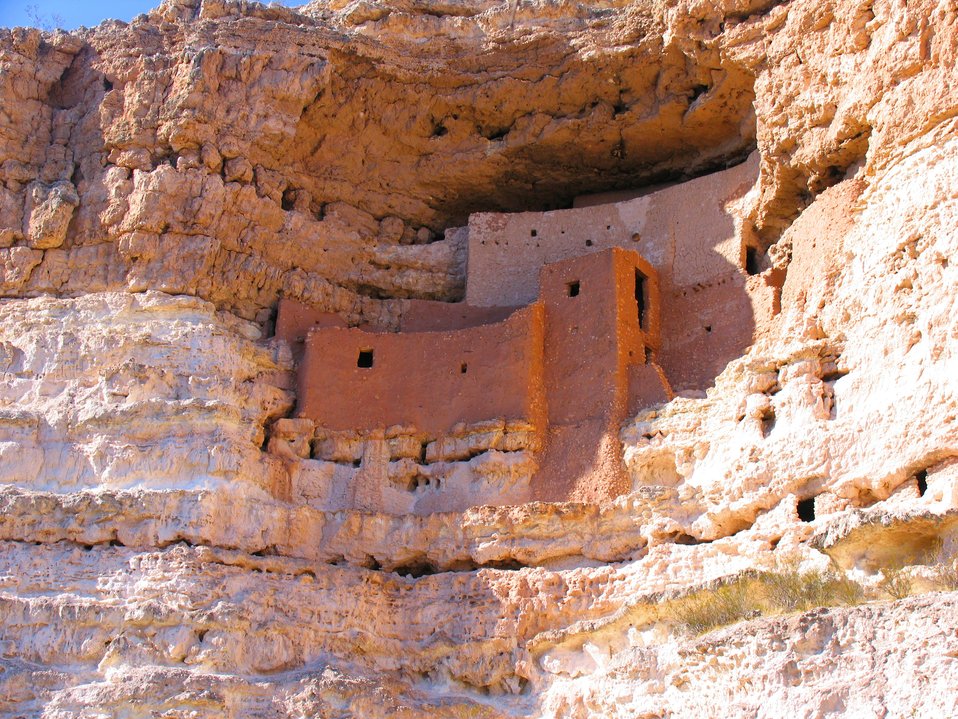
Montezuma's Castle cliff dwellings